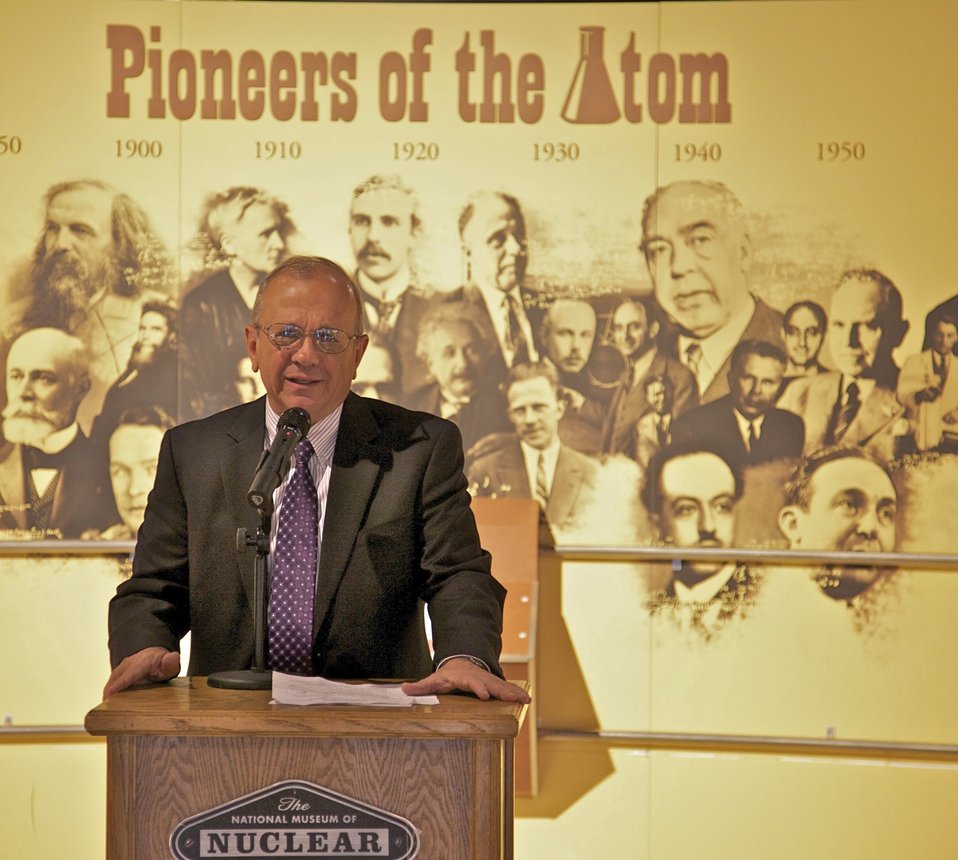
WIPP Transportation Exhibit

U.S. Department of Energy Carlsbad Field Office Interim Manager Ed Ziemianski addresses a group of visitors attending the November 5, 2011 unveiling of the Waste Isolation Pilot Plant (WIPP) Transportation exhibit at the National Museum of Nuclear Science and History in Albuquerque, N.M. The new exhibit highlights WIPP transportation components of the Department of Energy National Transuranic (TRU) Waste Program, including a cutaway of a TRUPACT-II, one of the shipping packages used to transport TRU waste to WIPP near Carlsbad, N.M.